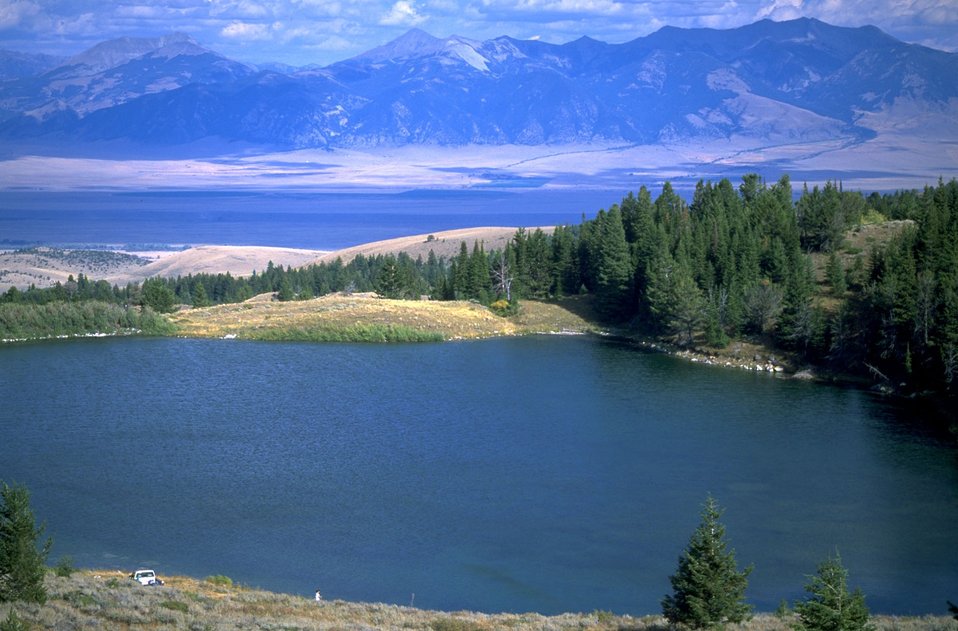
Twin Lakes with mountains in the background